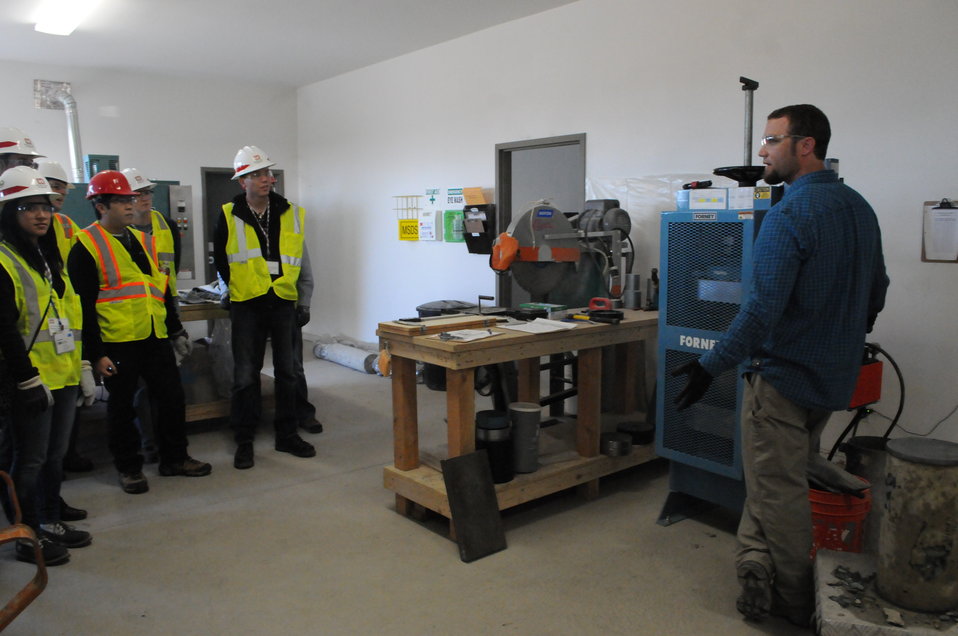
Young engineers visit Folsom Dam Spillway construction site

Tim Goetz, a lab technician for the Folsom Dam spillway project, tests concrete core samples under extreme hydraulic pressure Jan. 26, 2013 during a demonstration to recent college graduates from the American Society of Civil Engineers. The Folsom Dam spillway will provide enhanced flood damage reduction and dam safety when completed in late 2017.